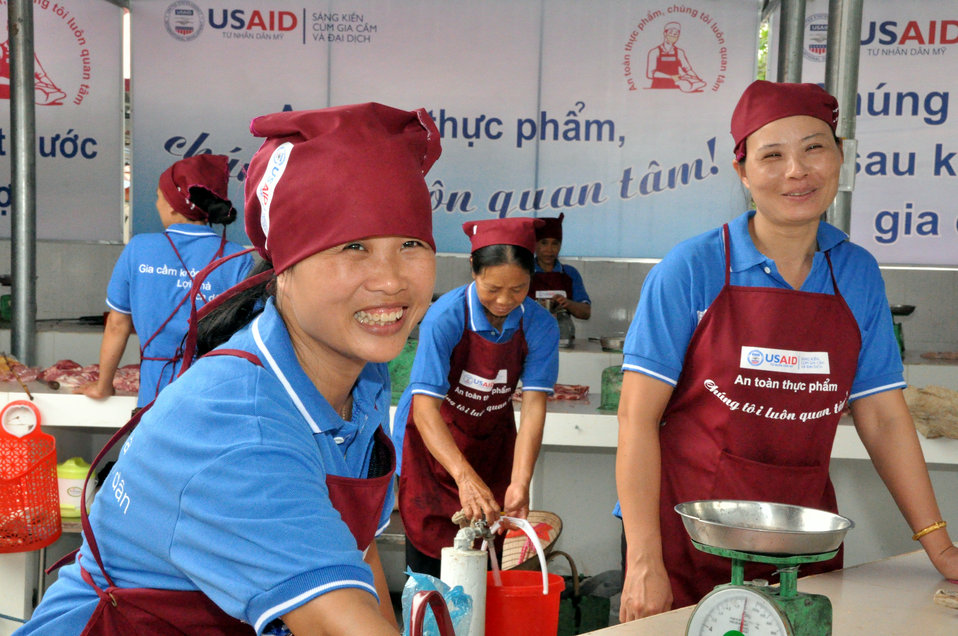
Handover Ceremony Hoa Mac Market Ha Nam

October 26, 2012